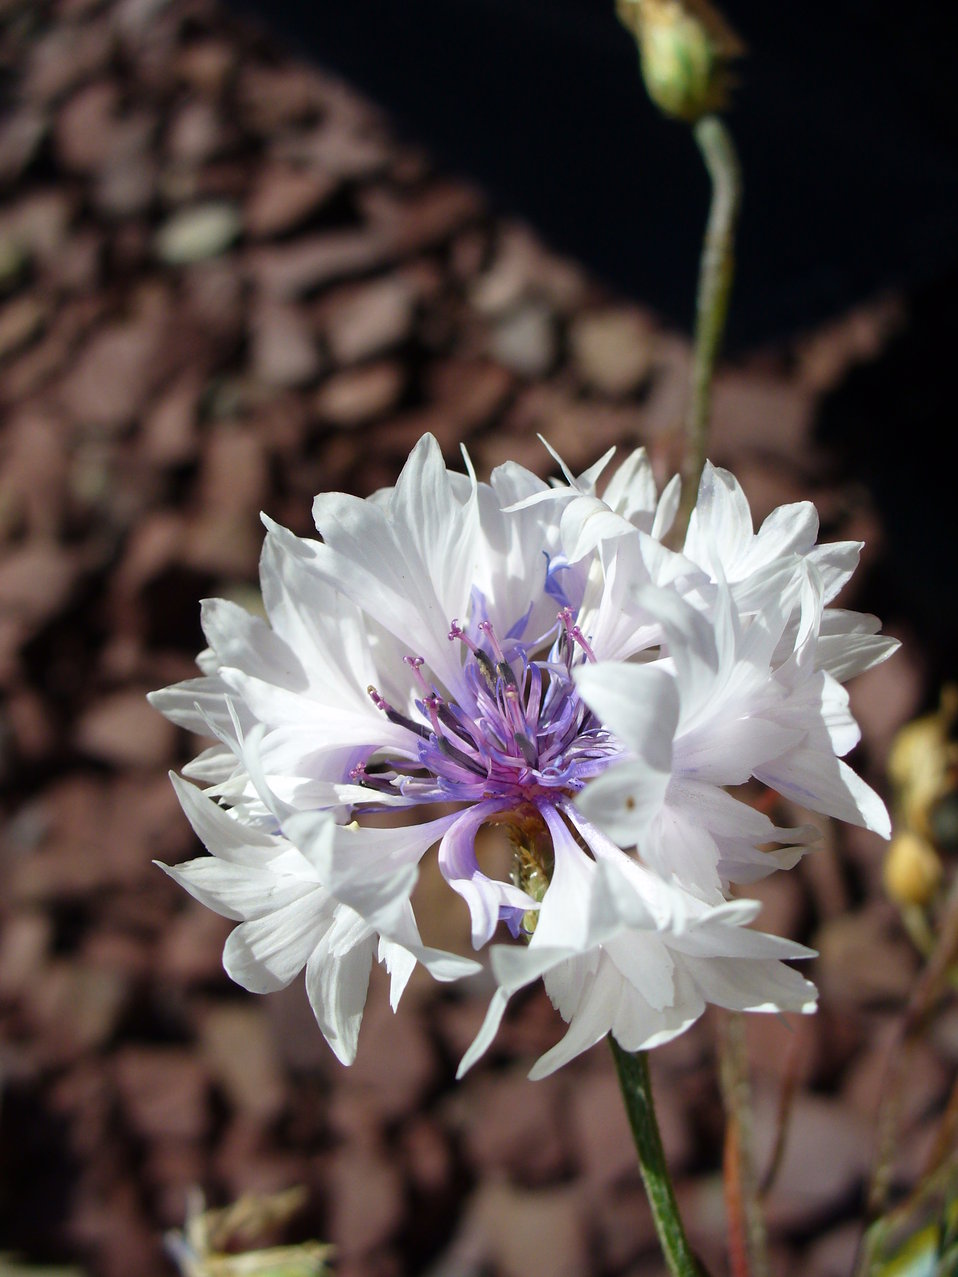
I am the originator of this photo. I hold the copyright. I release it to the public domain. This photo depicts flowers of a pale-flowered cultivar of Centaurea cyanus.